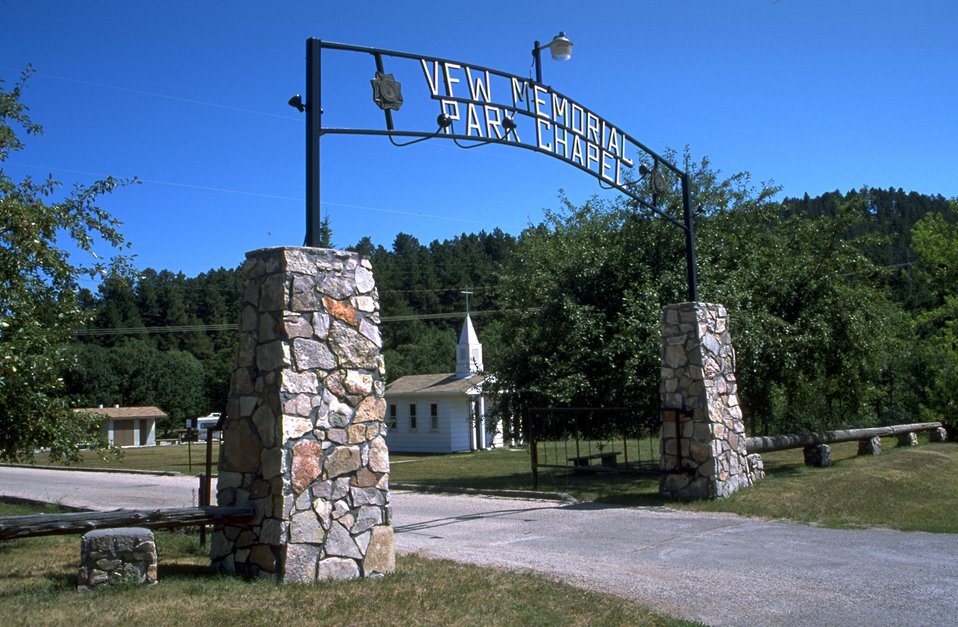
VFW Memorial Chapel entry arch at Fort Meade South Dakota